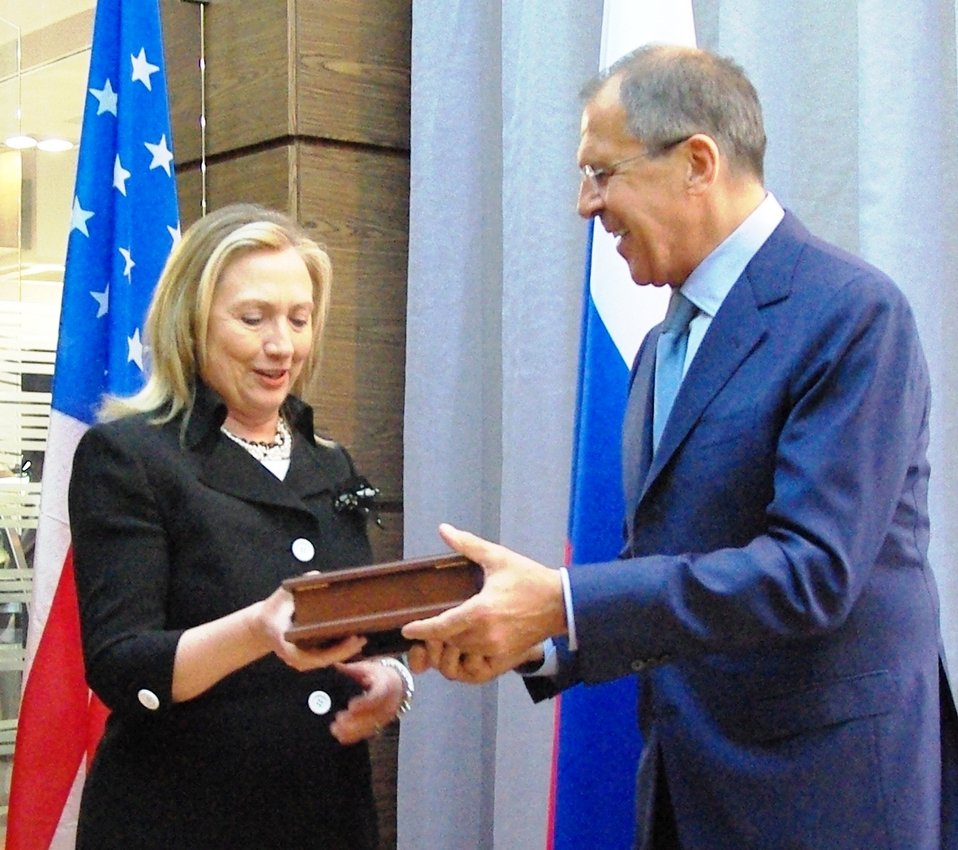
Secretary Clinton Meets With Russian Foreign Minister Lavrov

U.S. Secretary of State Hillary Rodham Clinton meets with Russian Foreign Minister Sergey Lavrov in St. Petersburg, Russia, on June 29, 2012.